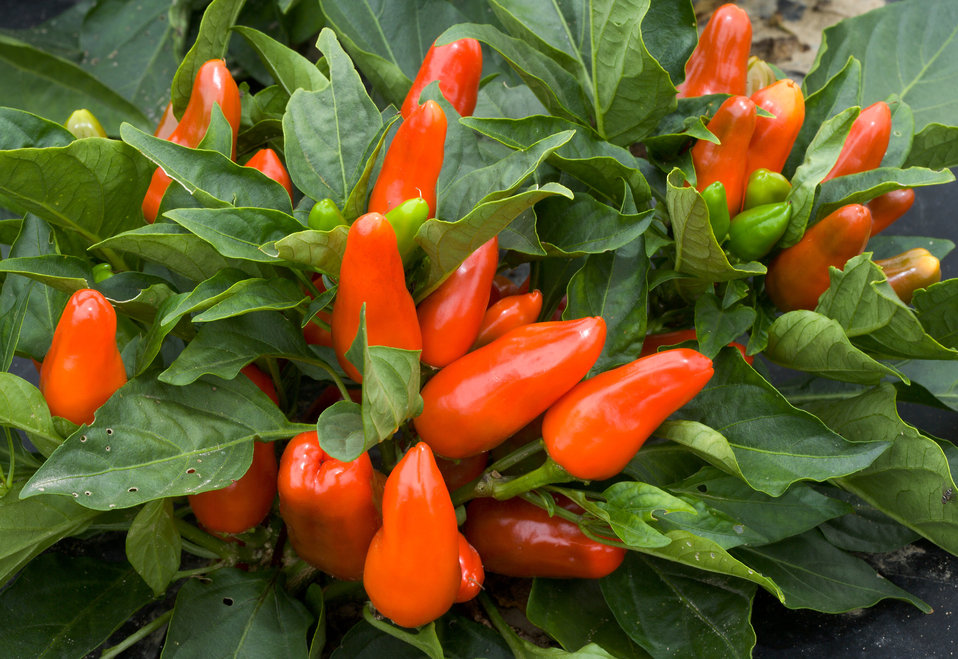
Tangerine Dream peppers grow in a cultivated bed on Aug. 26, 2005. The Tangerine Dream is a sweet, edible, ornamental pepper developed by the U.S. Department of Agriculture’s (USDA) Agricultural Research Service. It is a cross between a sweet bell pepper named “Cadice” and a squash type pepper with superior flavor named “Tennessee Cheese”.